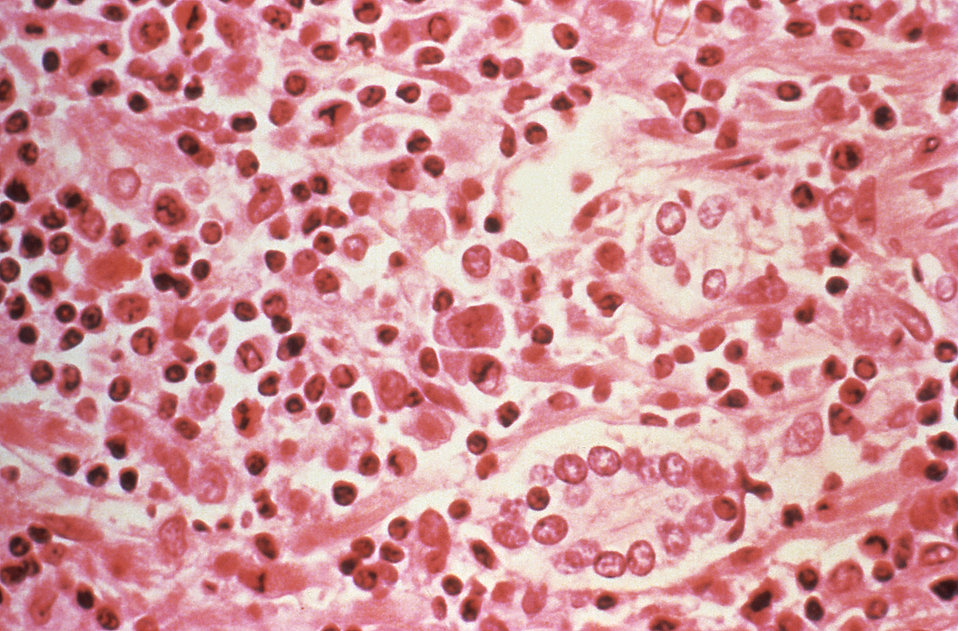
This is a micrographic study of liver tissue from a Hantavirus pulmonary syndrome (HPS) patient.